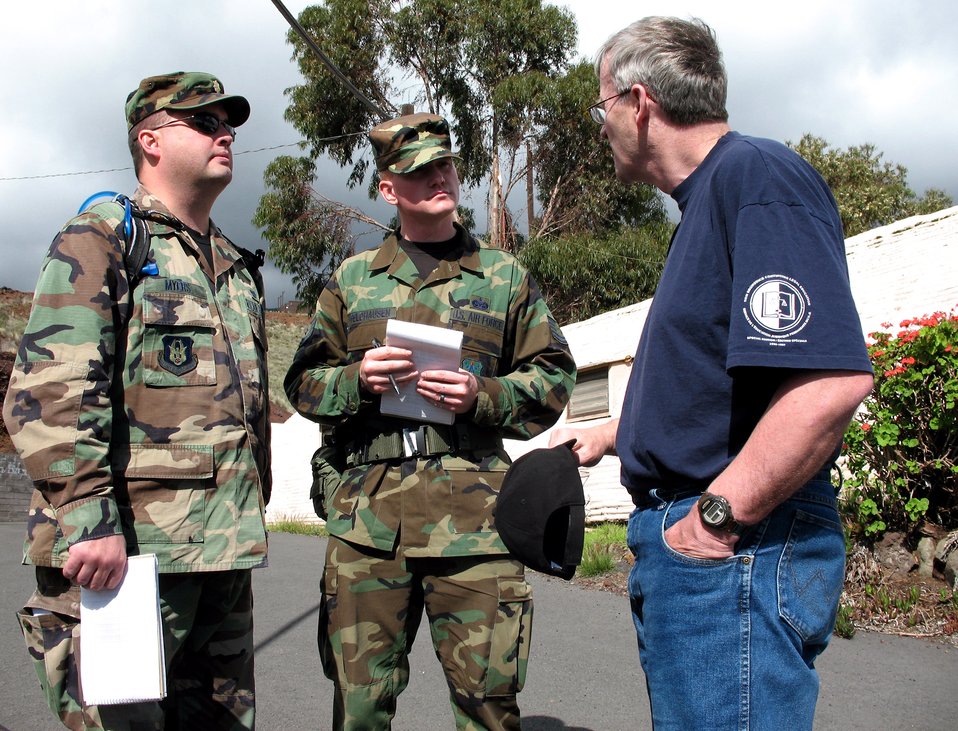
PACAF legal teams train to deploy

Maj. Peter Meyers, a lawyer, and Tech. Sgt. Lee Feldhausen, a paralegal, both from the Air Force Reserve Command, negotiate a situation Dec. 10 with a simulated non-governmental official, played by Canadian Army Maj. Warren Fensen. They and 21 other military members are deployed to the island of Hawaii's Pohakuloa Training Area for the Pacific Air Forces' PACJOLE, or Pacific Joint Operations Legal Exercise, which runs from Dec. 9 to 14.